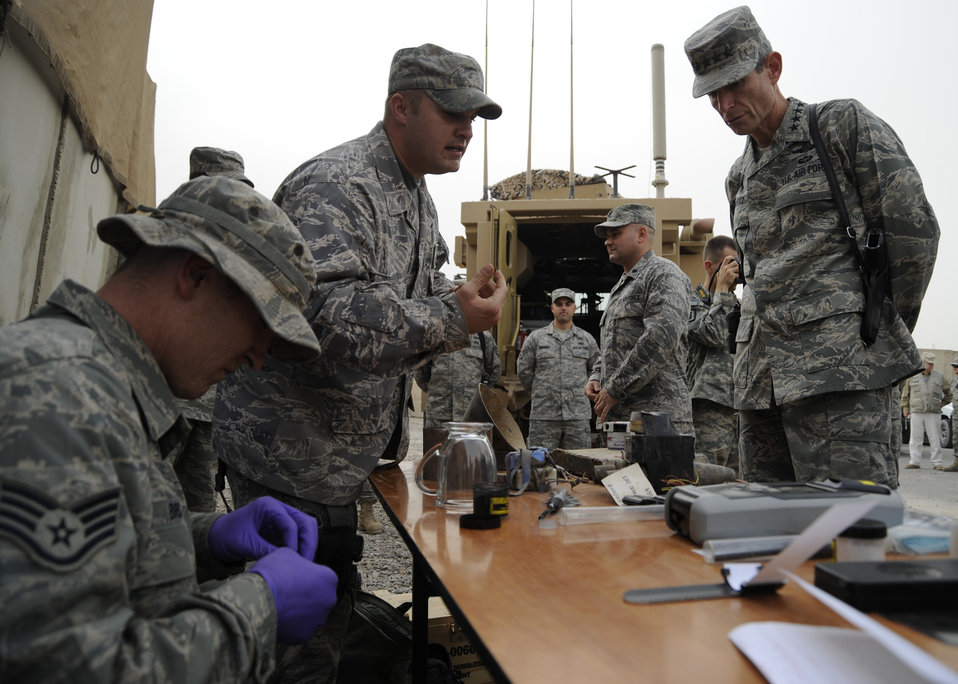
Chief of Staff tours Iraq

Air Force Chief of Staff Gen. Norton Schwartz receives a briefing from Staff Sgt. Mark Gostomski, an explosive ordnance disposal technician, on the operations of the weapons inspection team 4 at Task Force Troy at Camp Victory, Iraq, Oct. 24.